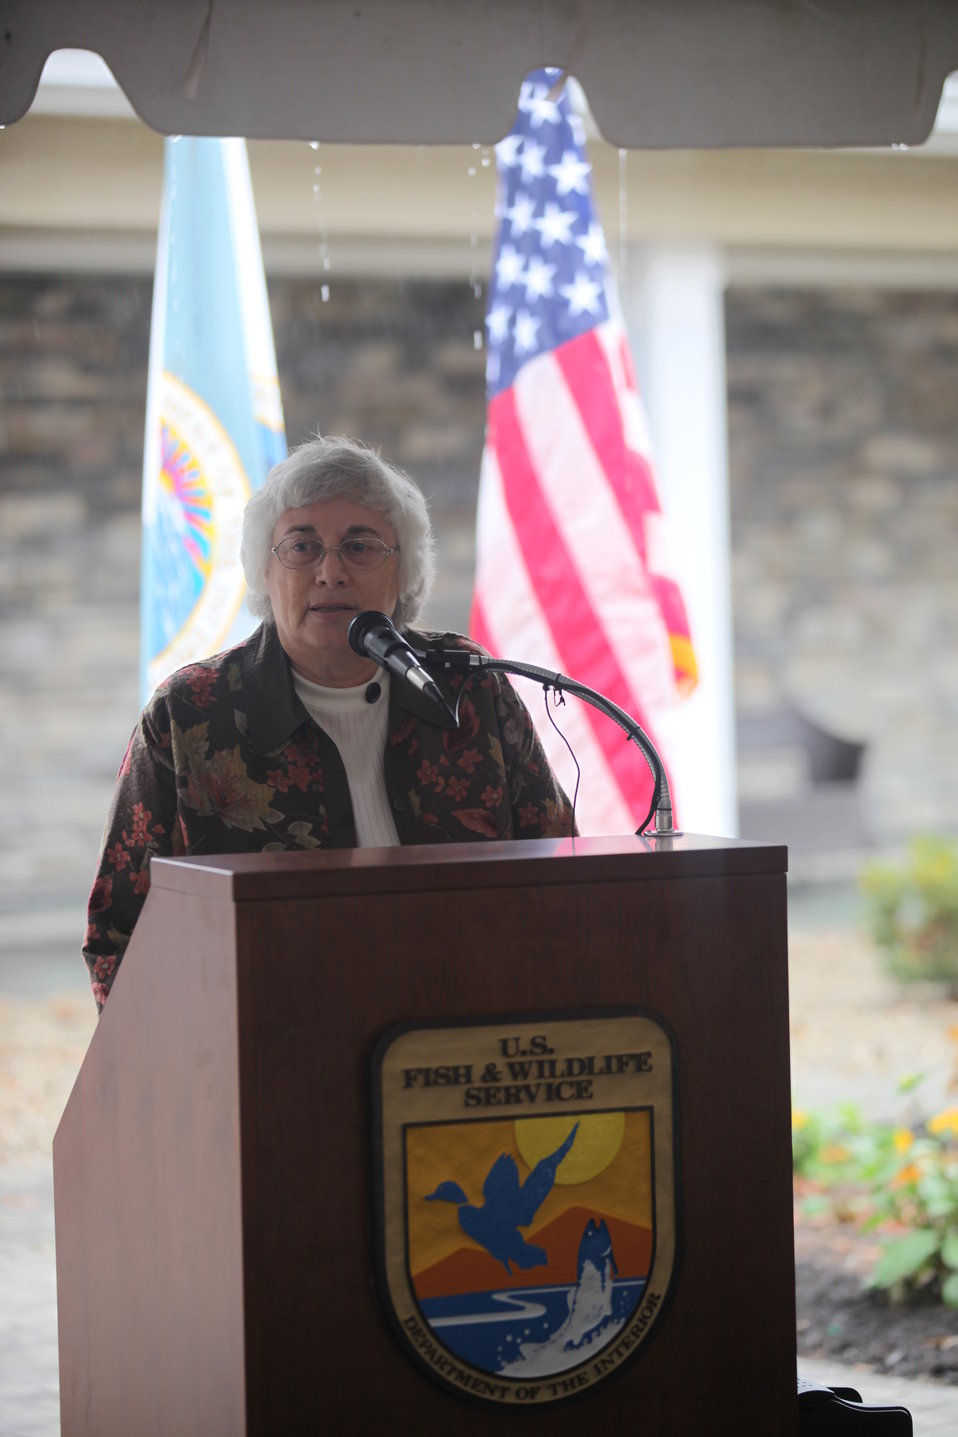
Refuge Friends Group President Claire Goad

Claire describes the Visitor center as a 'dream come true'. She is the President of the Wertheim National Wildlife Refuge Friends Group.